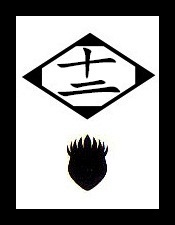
Español: Insignia y logo de escuadron shinigami de Bleach